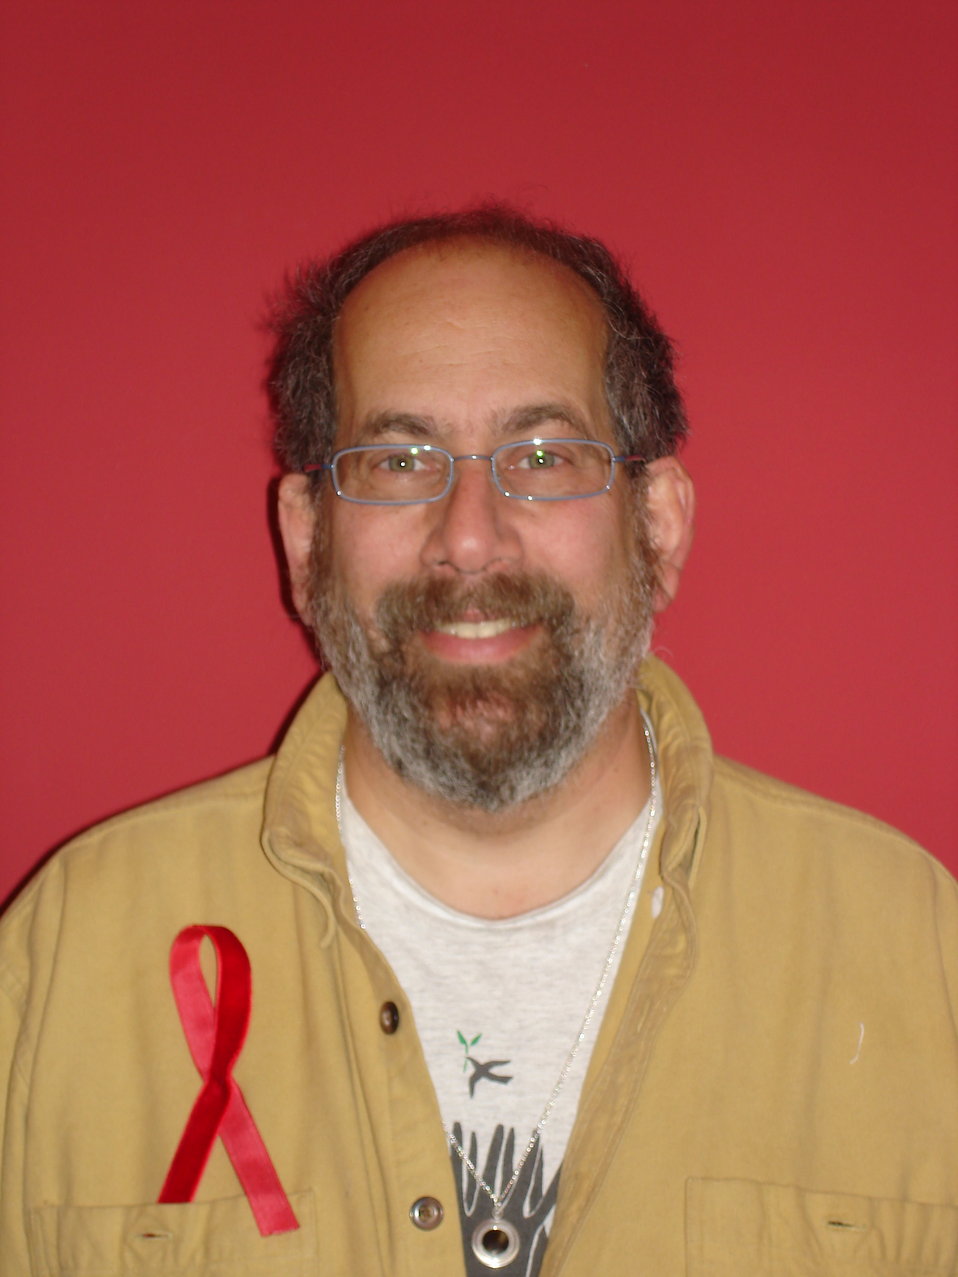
jeh